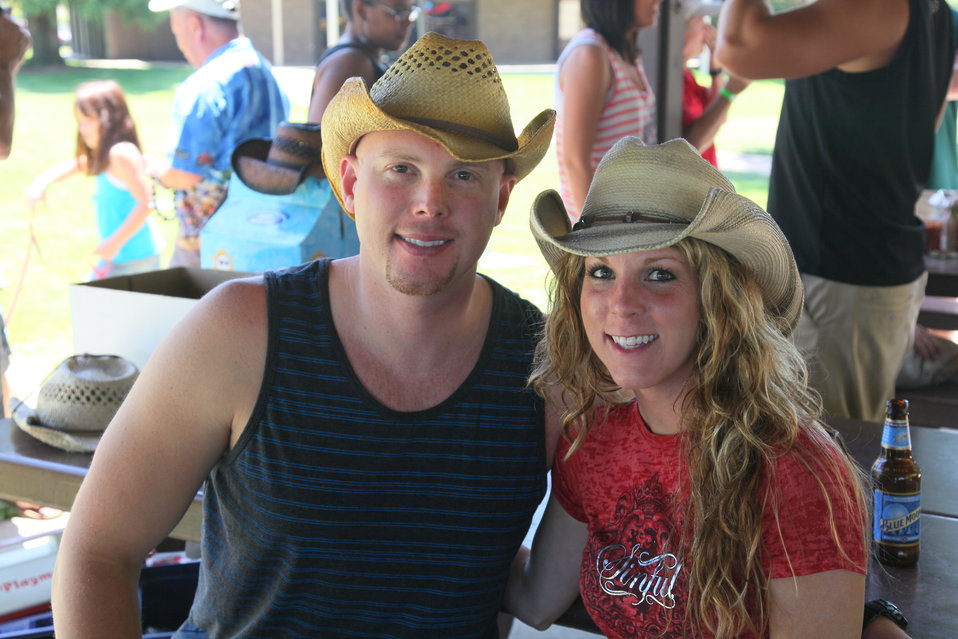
2011 Annual Picnic